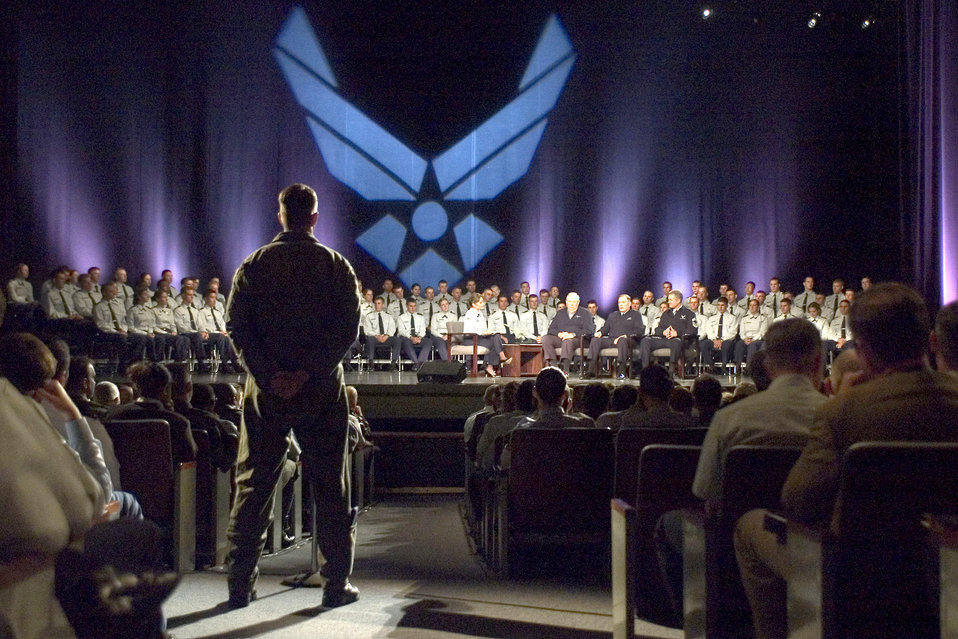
Academy town hall meeting reaches worldwide audience

U.S. AIR FORCE ACADEMY, Colo. -- An Airman asks a question to the Air Force's top three leaders -- Secretary of the Air Force Dr. James G. Roche, Air Force Chief of Staff Gen. John P. Jumper and Chief Master Sgt. of the Air Force Gerald R. Murray -- during the town hall meeting here Sept. 27. The event was broadcast on The Pentagon Channel and American Forces Radio and Television Service stations worldwide.